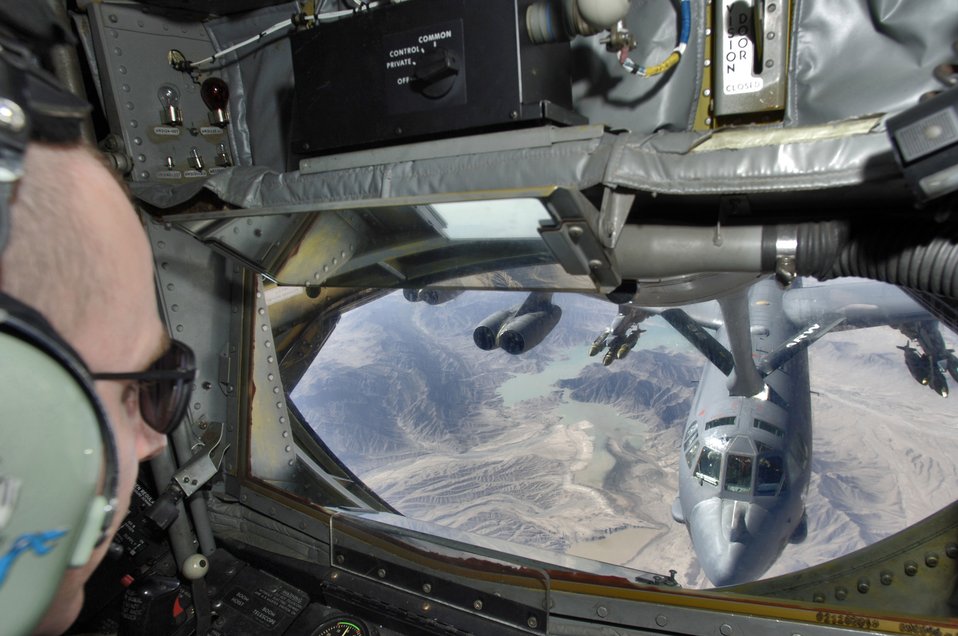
Close air support

SOUTHWEST ASIA (AFPN) -- Tech. Sgt. Thomas Ireland refuels a B-52 Stratofortress over Afghanistan during a close-air-support mission. The KC-135 Stratotanker transfers fuel at about 16 gallons per second. The B-52 is from the 2nd Bomb Wing at Barksdale Air Force Base, La.